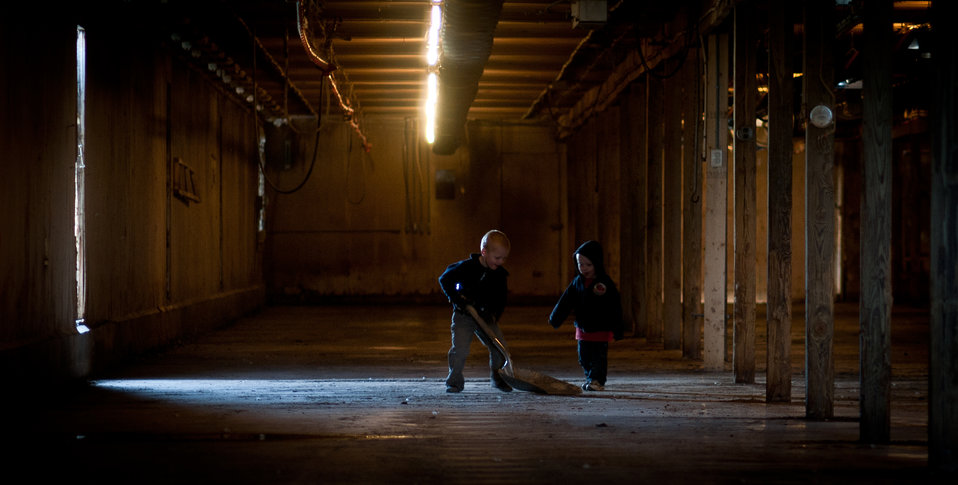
Gavin (2, right) and Grant Molnar (5, left) use a shovel to scour the floor for debris at the Roxanne Molnar Farm on April 21, 2011, in Grantville, PA. Roxanne and Matthew Molnar have an 80,000 poultry farm and were recipients of a $20,000 Rural Energy for America Program (REAP) grant. The money is a portion of the cost to modernize the second of two 40,000 chicken capacity chicken houses. Chickens need to be kept at a comfortable temperature to remain productive. New radiant heaters keep the chickens warm during Pennsylvania winters. On warm days, ceiling vents provide passive venting of heat out of the building; when chicken house temperatures are estimated to be above 90 degrees, fans come on, pulling air through water evaporator elements lowering air temperature down 10-15 degrees and flows along the chicken house's length, in effect a tunnel of cooled air. The benefits to the chickens are heat and excess moisture removal; minimized dust and odor; limits buildup of ammonia and carbon dioxide; and provides oxygen for respiration. All these systems are computer controlled allowing owner, Roxanne Molnar to run the farm by herself and raise two small boys Gavin (2) and Grant (5). Husband, Matthew works off the farm and frequently travels, so along with the demands of parenting and manually controlling fans, vents, and having to remove the 80,000 chickens from their feeders and moving them around to cool them was an increasingly daunting task. The computer controls of the new system automate many of the daylong tasks allowing the Molnar’s to run their family farm. USDA Photography by Lance Cheung.